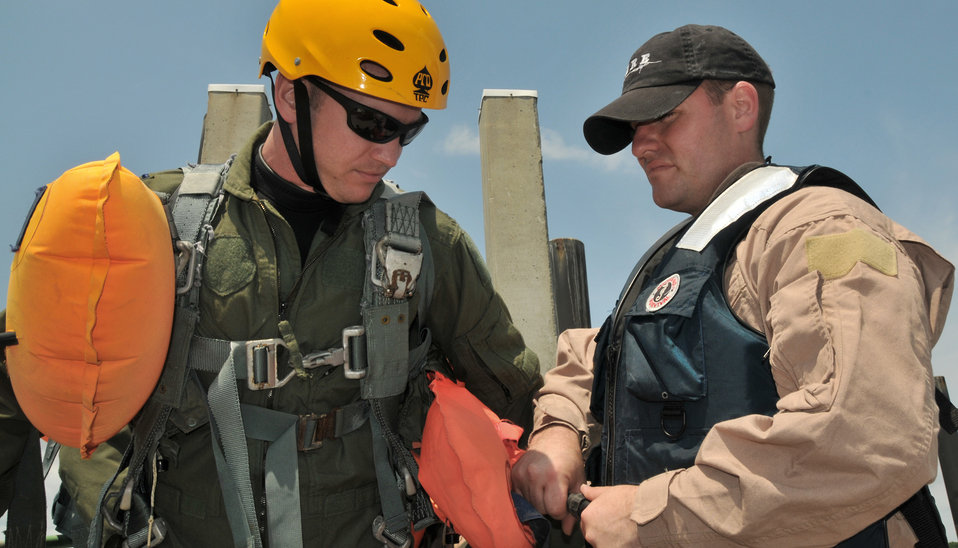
Water survival training course

Staff Sgt. Anthony Barrette inflates the life preserver around one of his students during a water survival training course May 2, 2011, at Charleston Harbor, South Carolina. Sergeant Barrette is a survival, evasion, resistance and escape specialist from the 437th Operations Support Squadron at Joint Base Charleston.